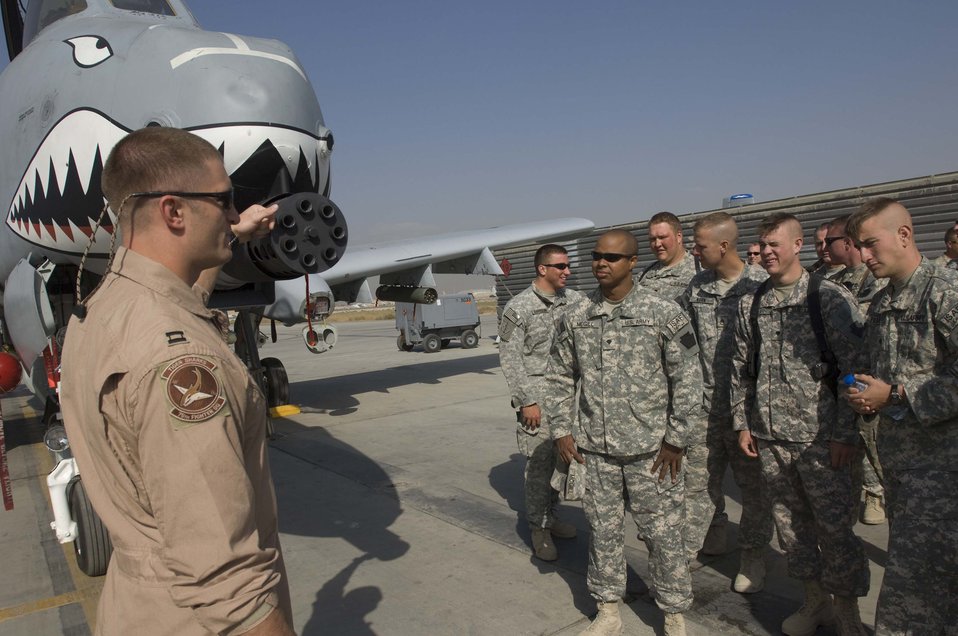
Air support unites Airmen, Soldiers in Afghanistan

Capt. Dylan Thorpe talks about the 30mm cannon on the A-10 Thunderbolt II with Pennsylvania Army National Guard Soldiers during an Oct. 28 visit to Bagram Airfield, Afghanistan. Members from the 391st Expeditionary Fighter Squadron and the 75th Expeditionary Fighter Squadron hosted the Soldiers who wanted to thank the pilots who protect ground forces with close-air support while engaged in firefights with enemy forces. The A-10's 30mm weapon is a vital asset to Solders on frontlines who need close-air support. Captain Thorpe is an A-10 pilot.